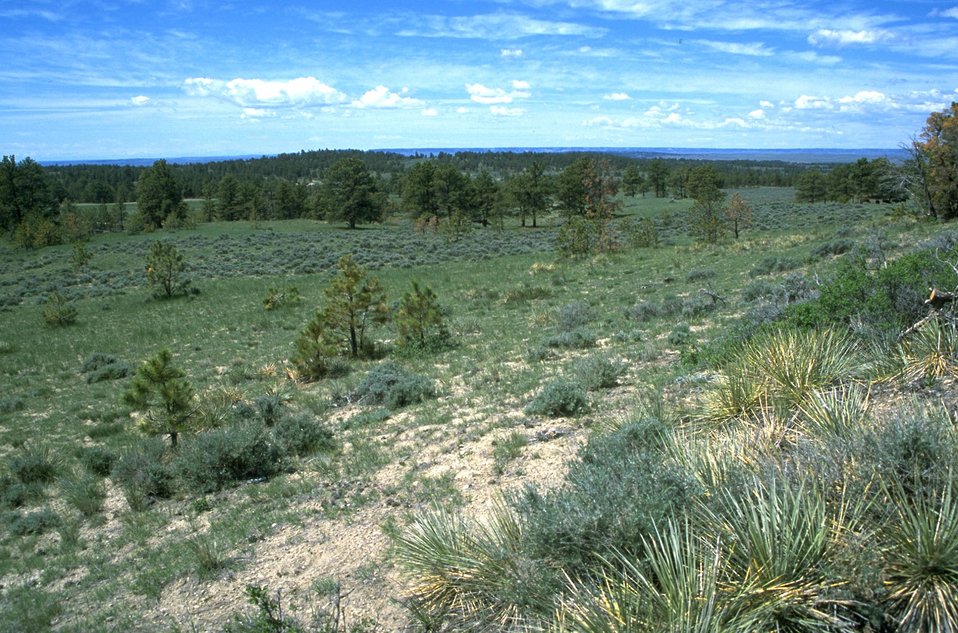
Sagebrush and ponderosa pine trees in the Shepherd Recreation Area